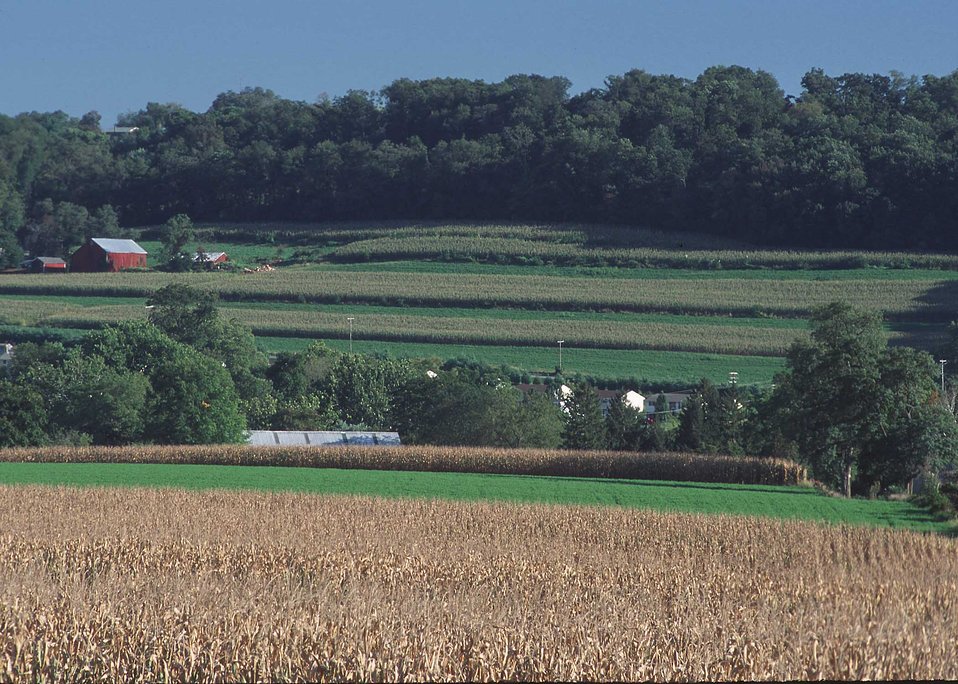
Contour Stripcropping into Woodlands.